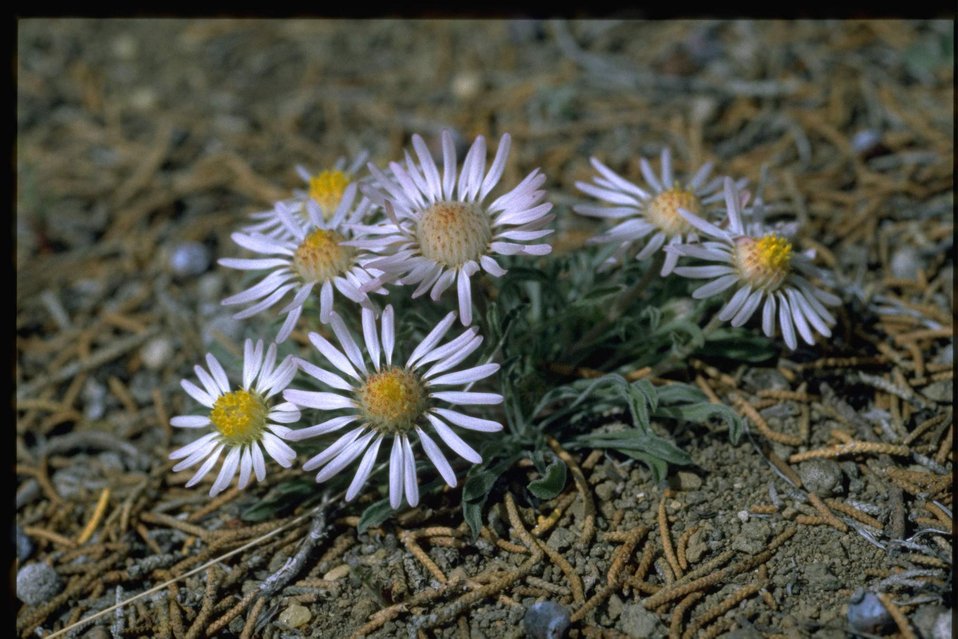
Medium shot of thread-leafed daisies.